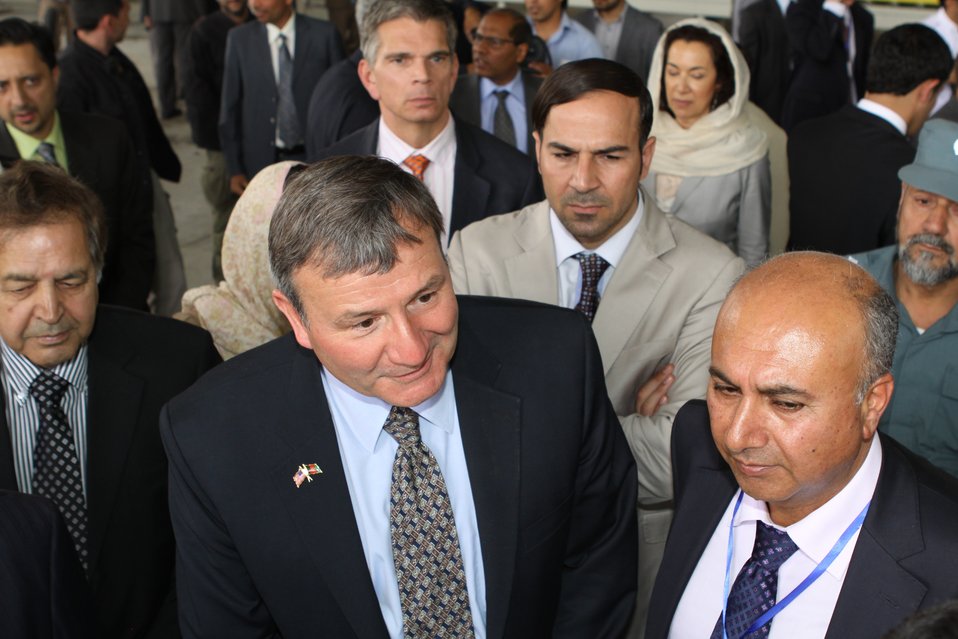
100525 Hirat Marble Conference 383